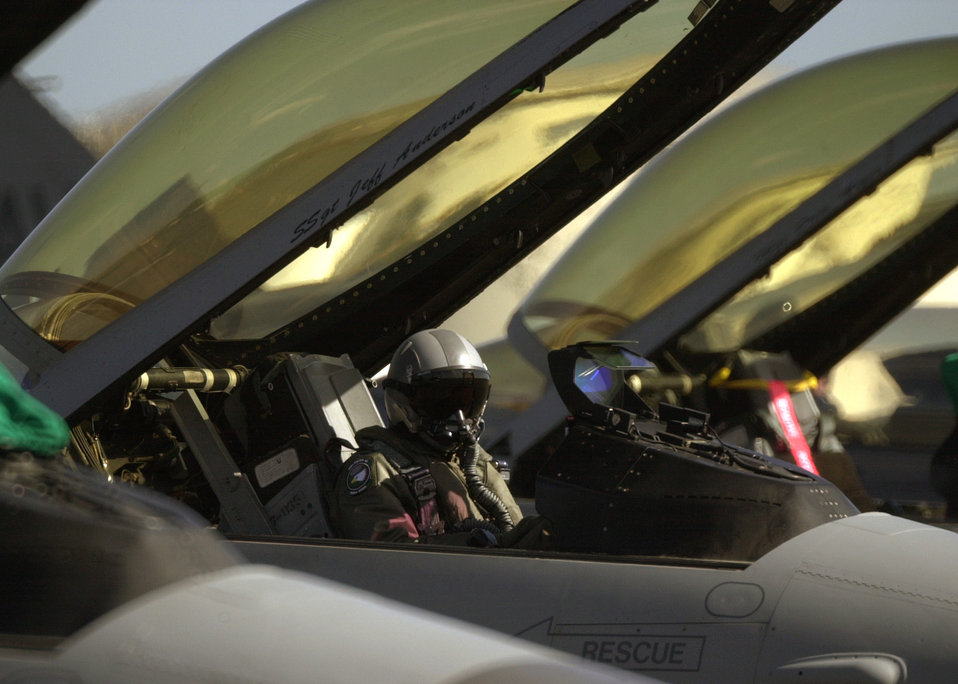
Ready to launch

SIDI SLIMANE AIR BASE -- An F-16 Fighting Falcon pilot from the 555th Fighter Squadron, Aviano Air Base, Italy gets ready to launch. One hundred sixty people deployed to Morocco in support of African Eagle exercise. African Eagle a bi-annual exercise designed to practice dissimilar air-to-air training with the Royal Moroccan air force.